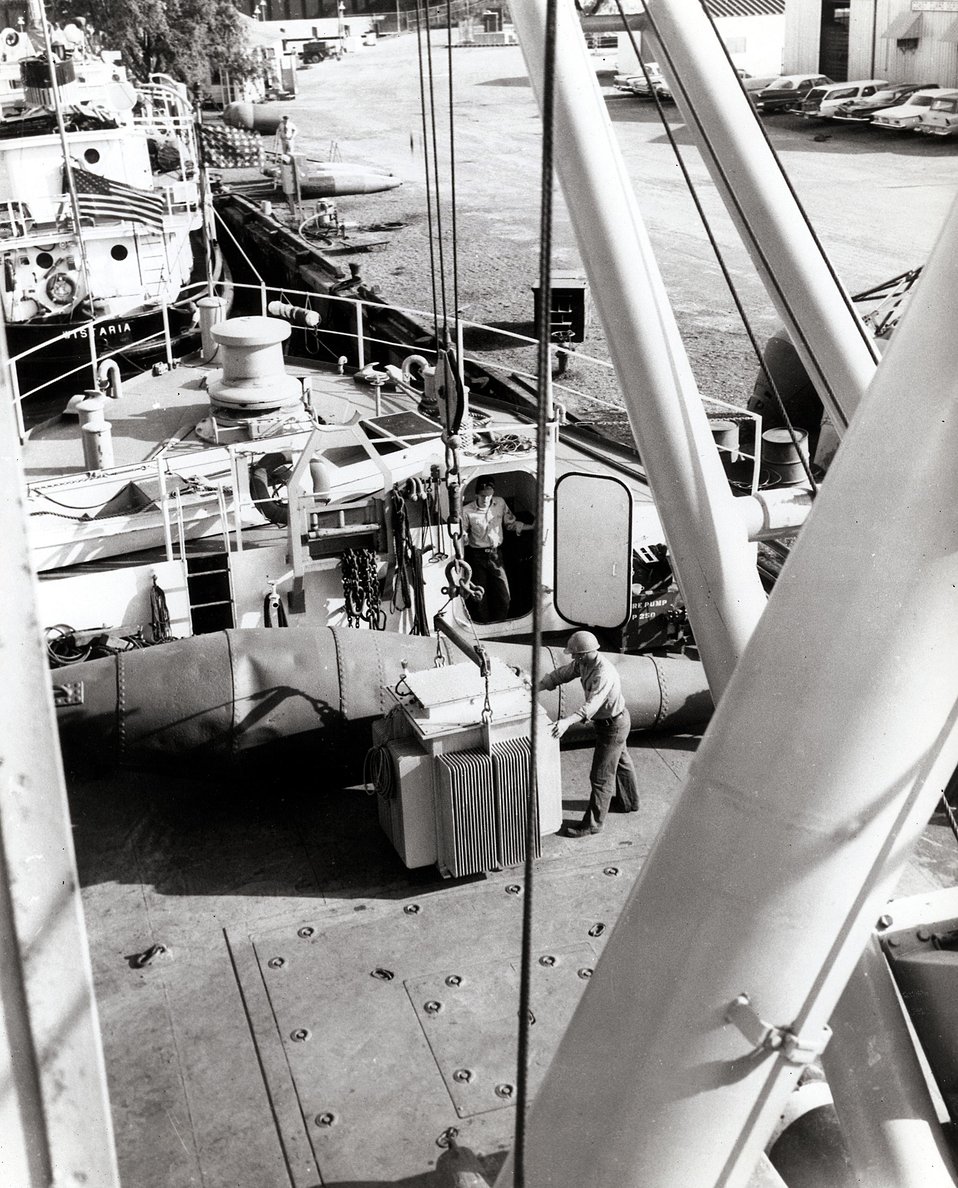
SNAP-7B nuclear generator is placed on board a Coast Guard buoy tender at Curtis Bay, MD, for its trip to the Baltimore Light.